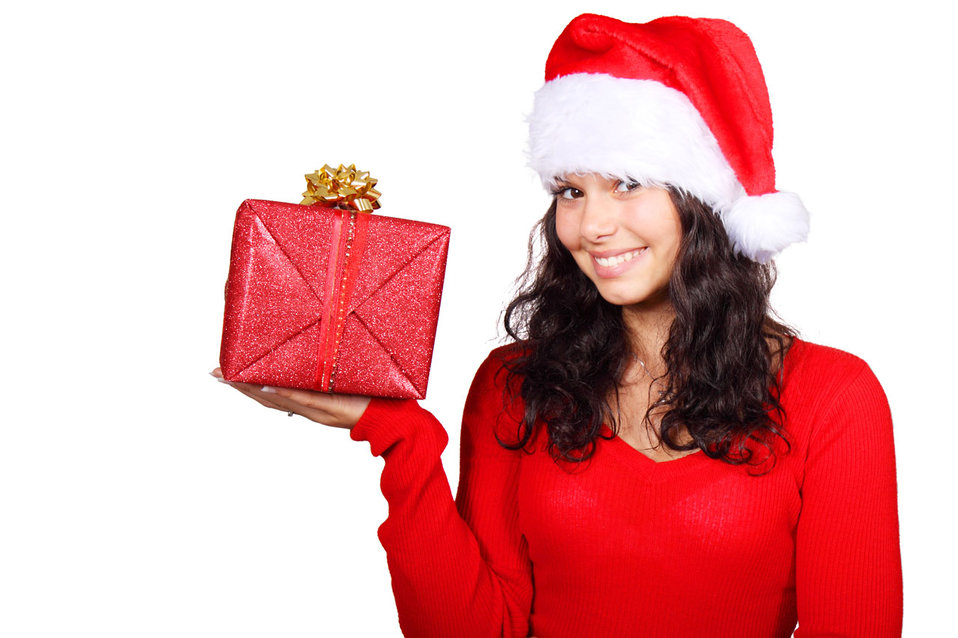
Santa girl

Santa claus girl holding a christmas gift.